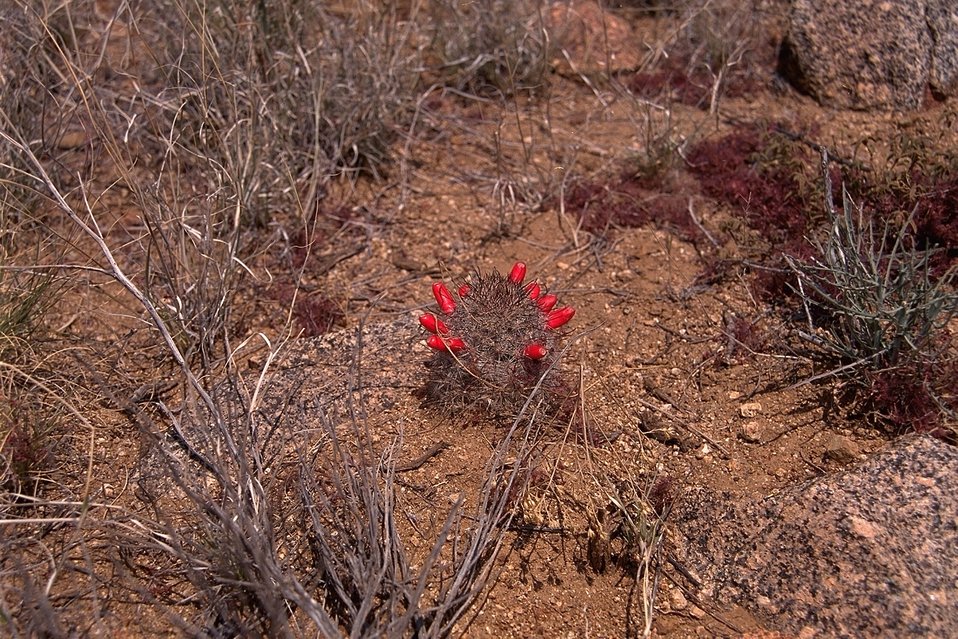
A small barrel cactus with little blooming buds.